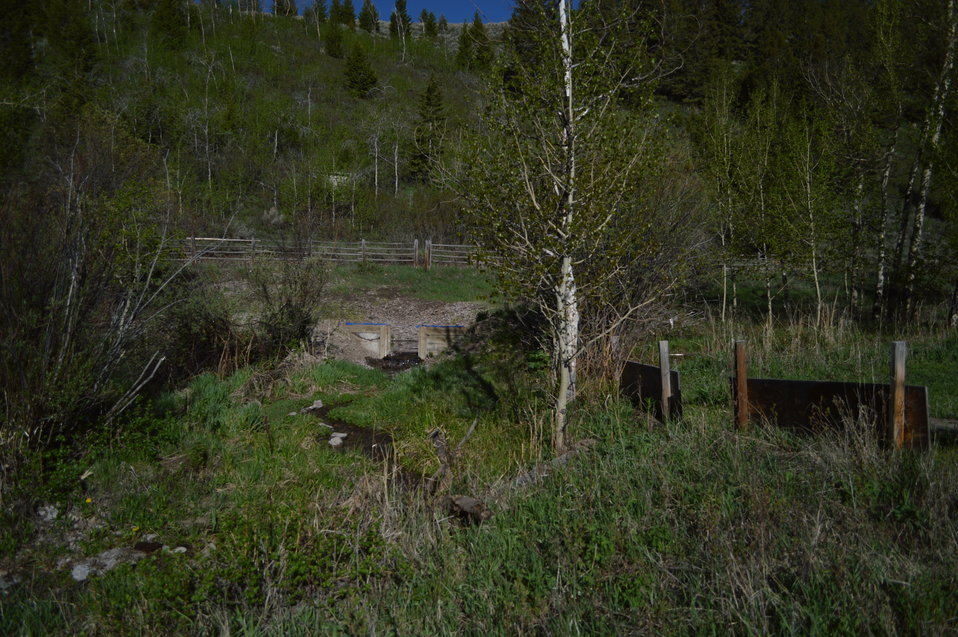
Regional Leadership Visit to Montana 2014